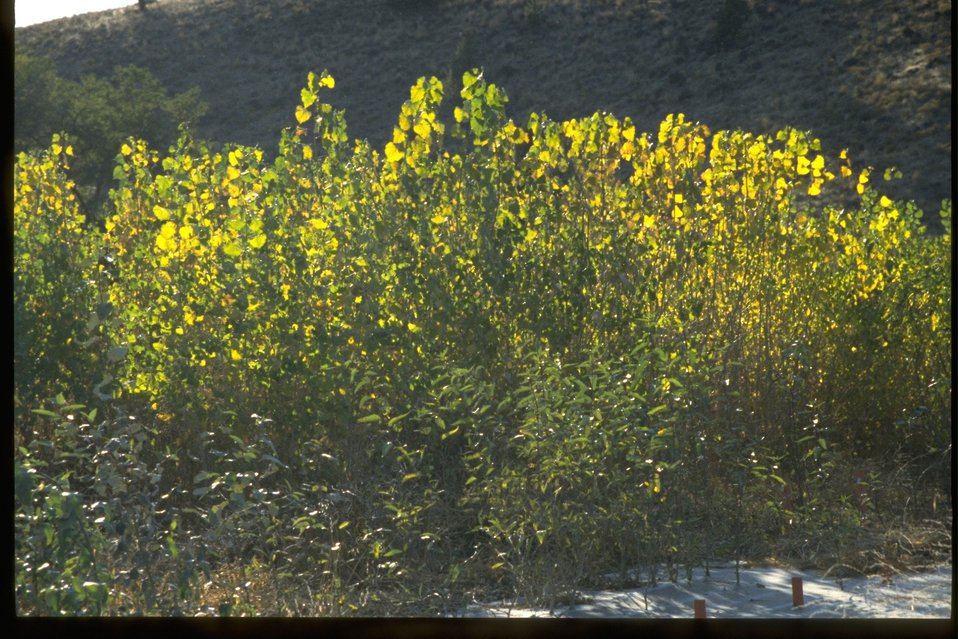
Cottonwood plantation near Clarno Road. Ground cloth under trees.